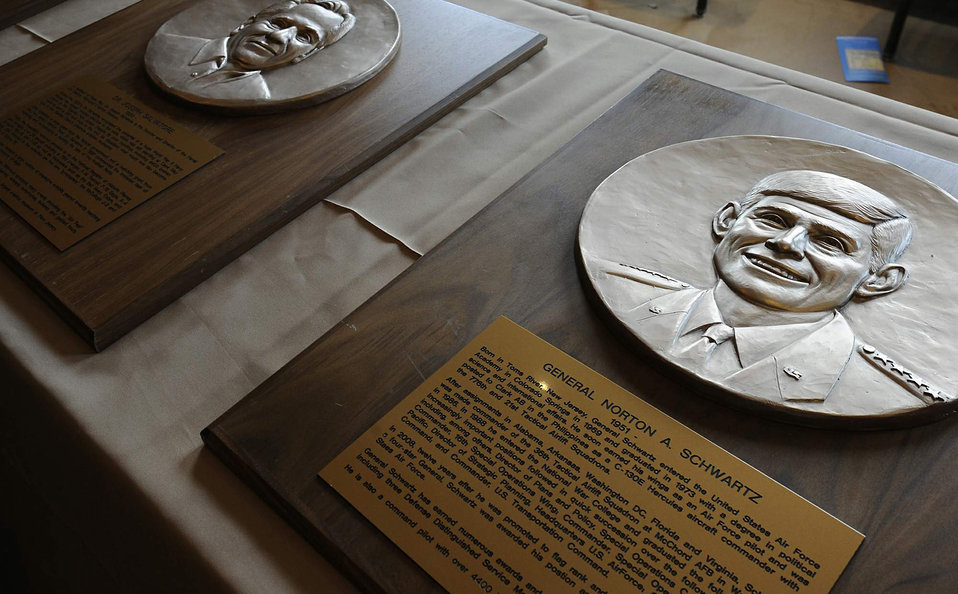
Aviation Hall of Fame and Museum

Air Force Chief of Staff Gen. Norton Schwartz, whose honorary plaque is seen here, was inducted into the New Jersey Aviation Hall of Fame May 11, 2011, during a ceremony in Teterboro, N.J. General Schwartz was inducted with three others. The inductees' likenesses will hang permanently in the Aviation Hall of Fame and Museum of New Jersey.